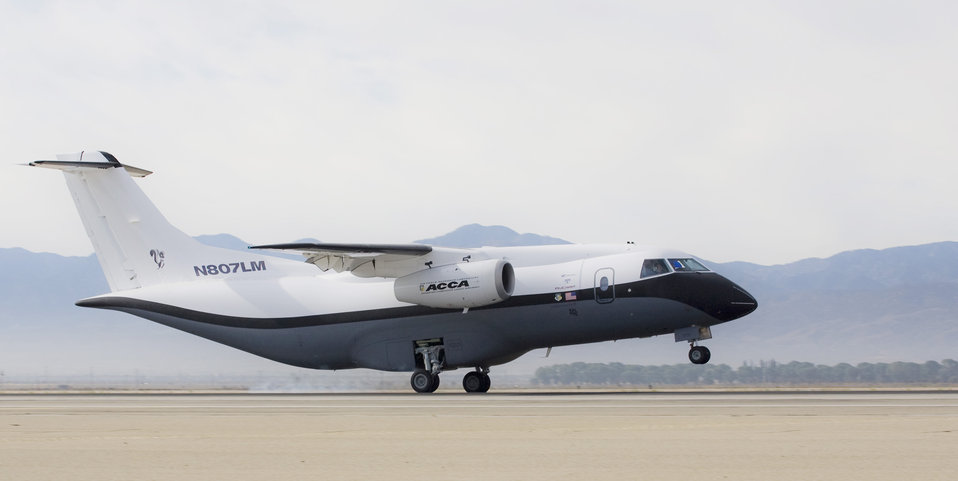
Advanced composite cargo aircraft makes first flight

The Advanced Composite Cargo Aircraft made its first test flight June 2 from Air Force Plant 42 in Palmdale, Calif. The ACCA is proof of concept technology demonstrator for advanced composite manufacturing processes in a full-scale, certified aircraft. It was developed by Air Force Research Laboratory and Lockheed Martin officials.